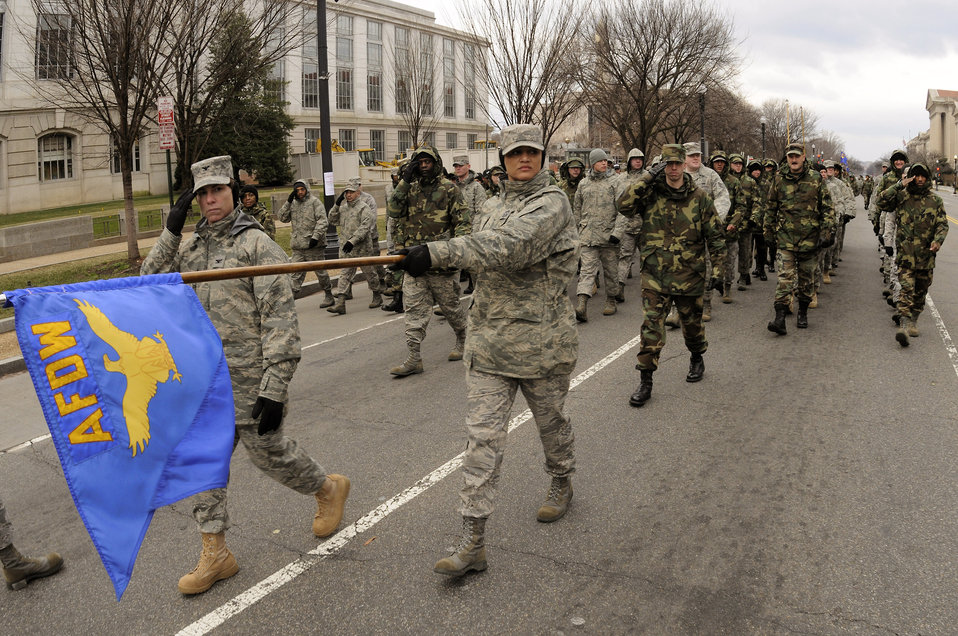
Practice makes perfect

Col. Elisabeth B. Borelli and Chief Master Sgt. Robin Johnson lead a flight of Airmen from the Air Force District of Washington down Constitution Avenue during a practice run of the inauguration parade for President-elect Barack Obama Jan. 11 in Washington, D.C. Colonel Borelli is the 11th Operations Group commander, and Chief Johnson is the 11th Wing command chief.